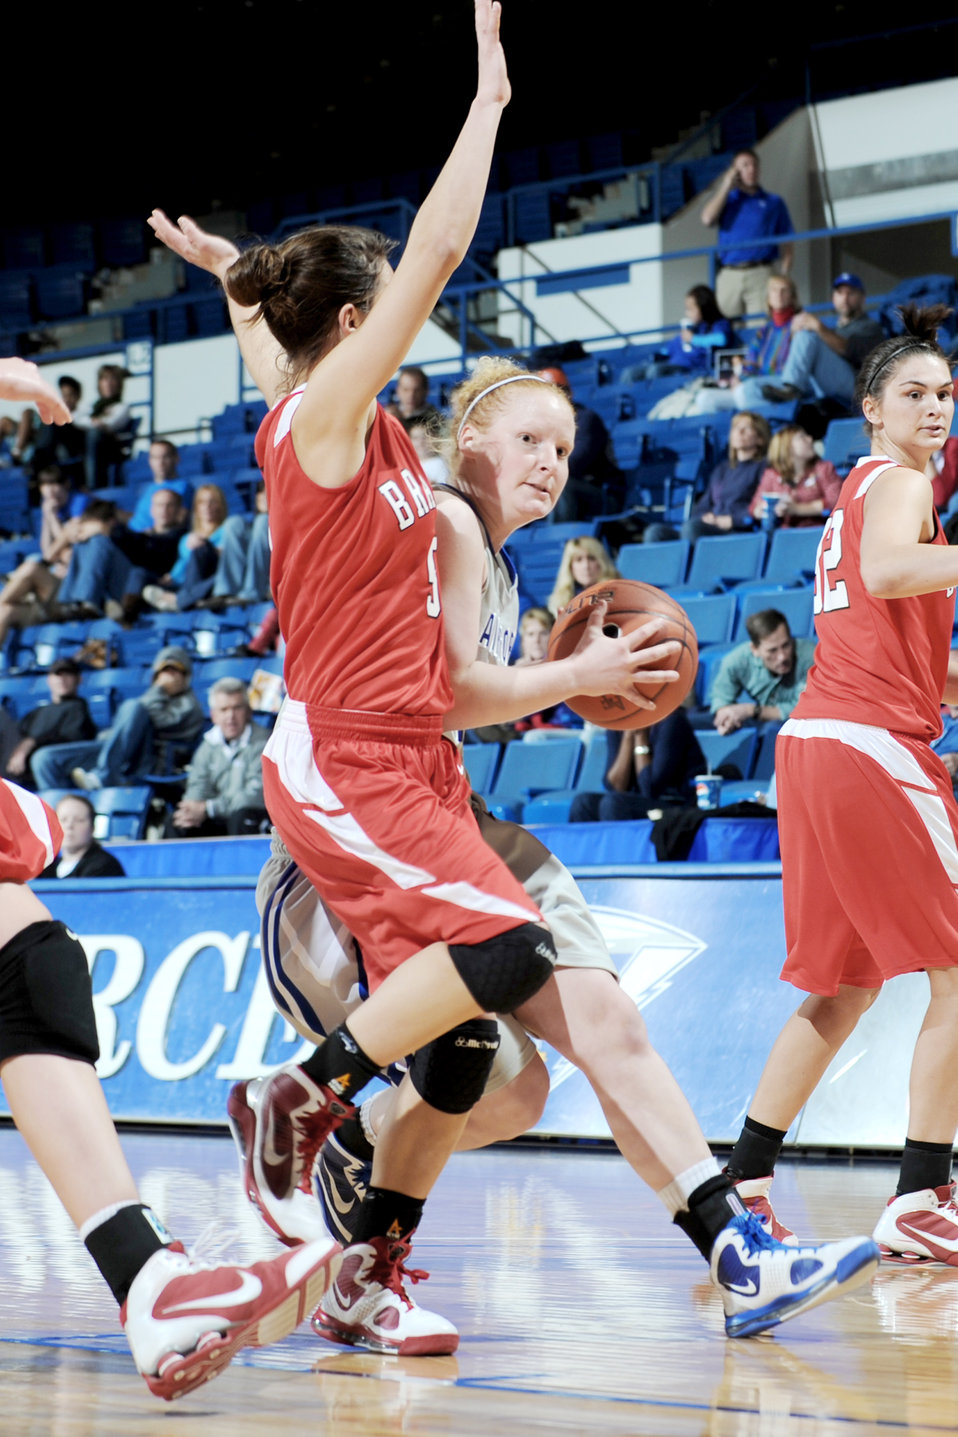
Women's basketball: Bradley University runs past Air Force

Falcon freshman guard Alicia Leipprandt drives toward the basket past Bradley University's Hanna Muegge during the U.S. Air Force Academy game against the Braves at the Academy's Clune Arena Dec. 19, 2009. Air Force lost the game 62-45.